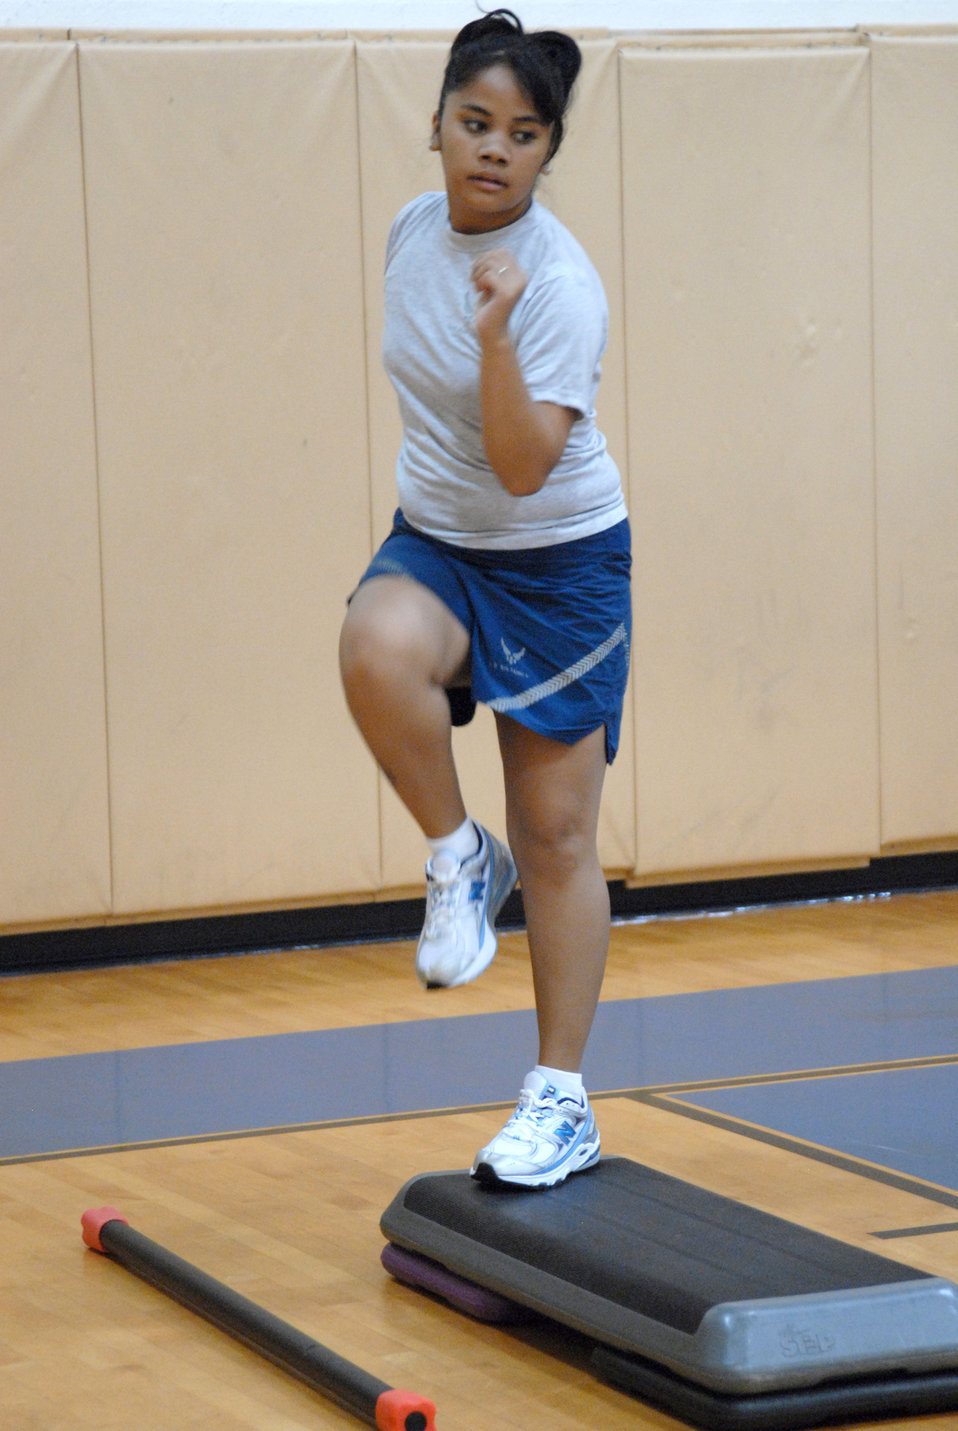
Post Pregnancy Pt Class

Senior Airman Fiatagata Ulukivaiola does high knee step aerobics during post-pregnancy PT July 21, 2010, at Hurlburt Field, Fla. The class is intended to help active-duty women recondition themselves and prevent injury by training members to increase and maintain their fitness level after maternity leave.